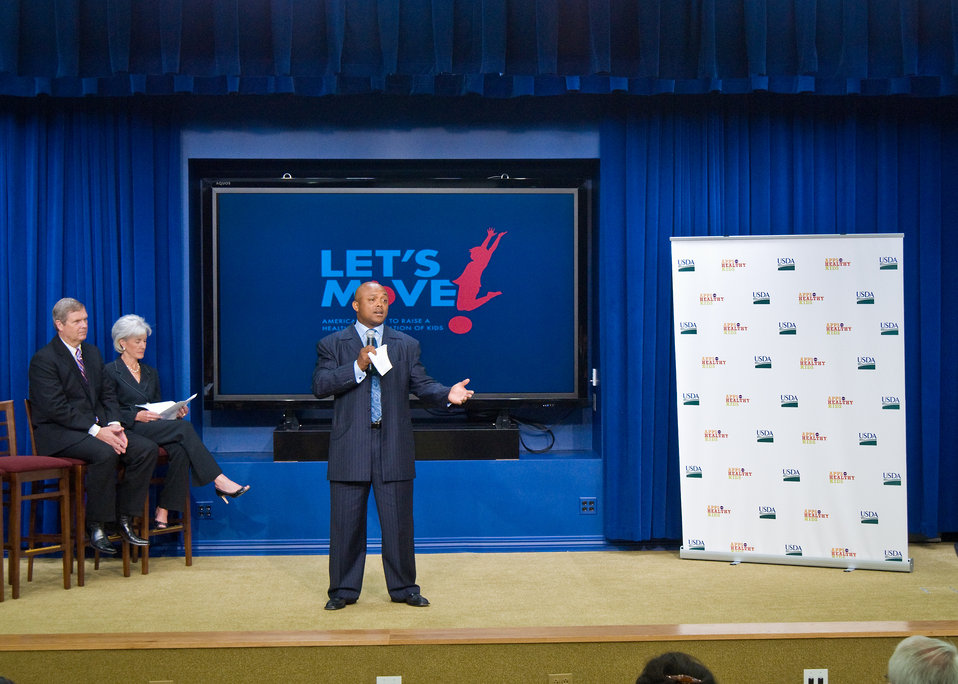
Agriculture Secretary Tom Vilsack and Health and Human Services Secretary Kathleen Sebelius listen as former Washington Redskins Running Back Brian Mitchell speaks of the importance of childhood nutrition as they honor the Winners of The Apps for Healthy Kids competition at the White House, Wednesday, September 29, 2010. The Apps for Healthy Kids competition is part of First Lady Michelle Obama’s Let’s Move campaign to end childhood obesity within a generation. The competition challenges software developers, game designers, students and other innovators to develop fun and engaging software tools and games to urge children, especially “tweens” (children ages 9-12) – directly or through their parents – to eat better and be more physically active. The applications are software tools or games for the web, personal computer, mobile handheld device, console or any software platform available to the public. USDA Photo 10di1506-62 by Bob Nichols